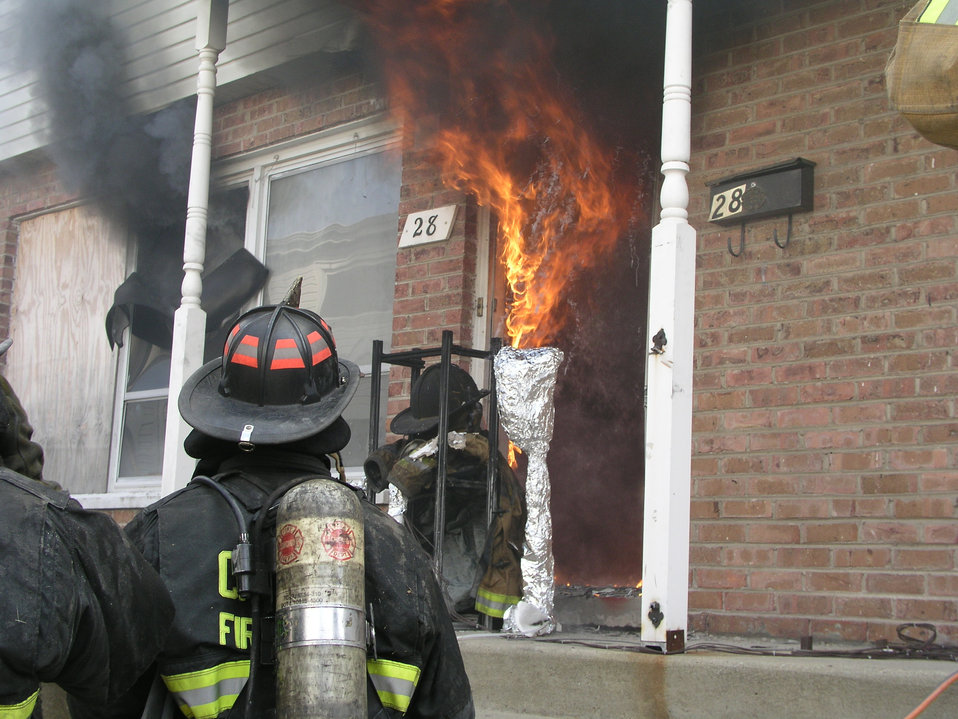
Fire Test

Flames from a living-room pour out the front door of a townhouse in NIST tests that studied conditions that can result in the failure of the facepiece lens of the self-contained breathing apparatus worn by firefighters. Facepieces were outfitted with devices to record temperatures and then mounted on a headform test stand placed outside doorway. The foil-wrapped equipment to the right of test set-up measured thermal heat flux.